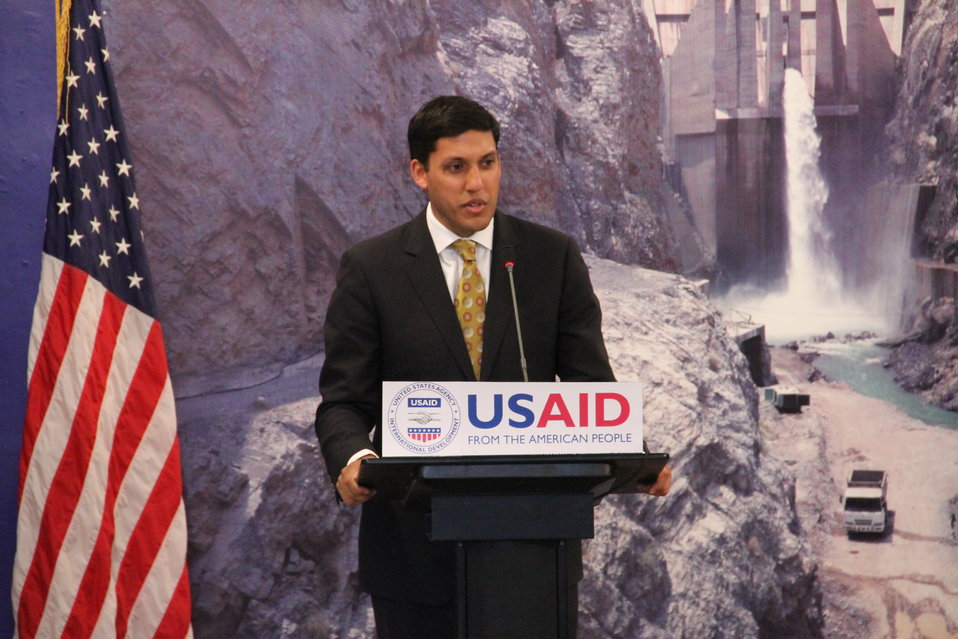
Photo Exhibition Celebrate US-PAK Cooperation at PNCA, Islamabad on April 13, 2012

Dr. Rajiv Shah, Administrator for USAID addressing the media